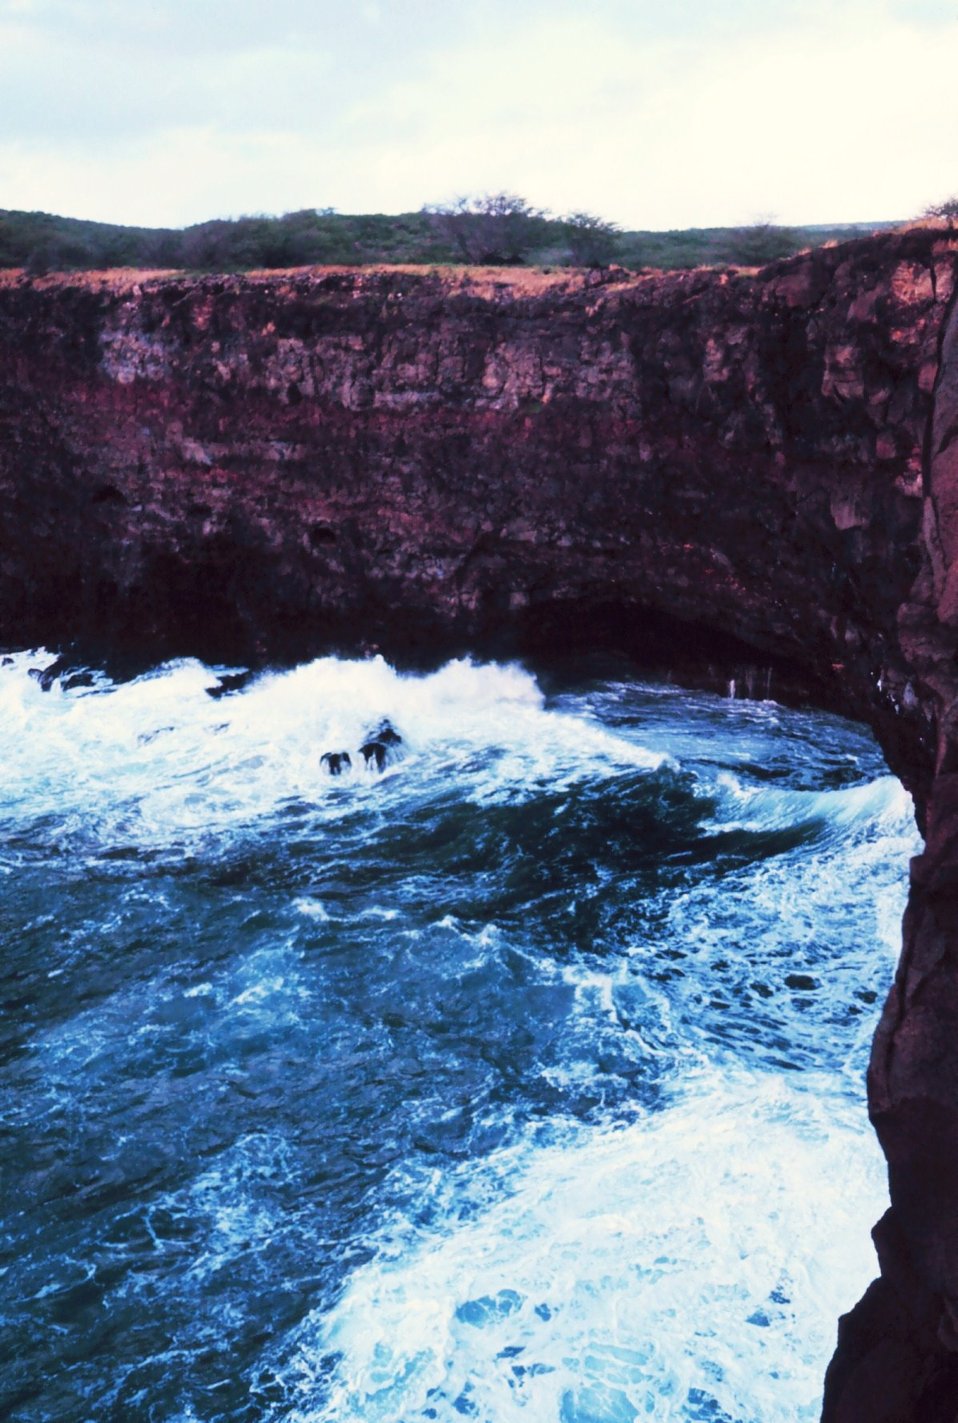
Lanai Cliffs